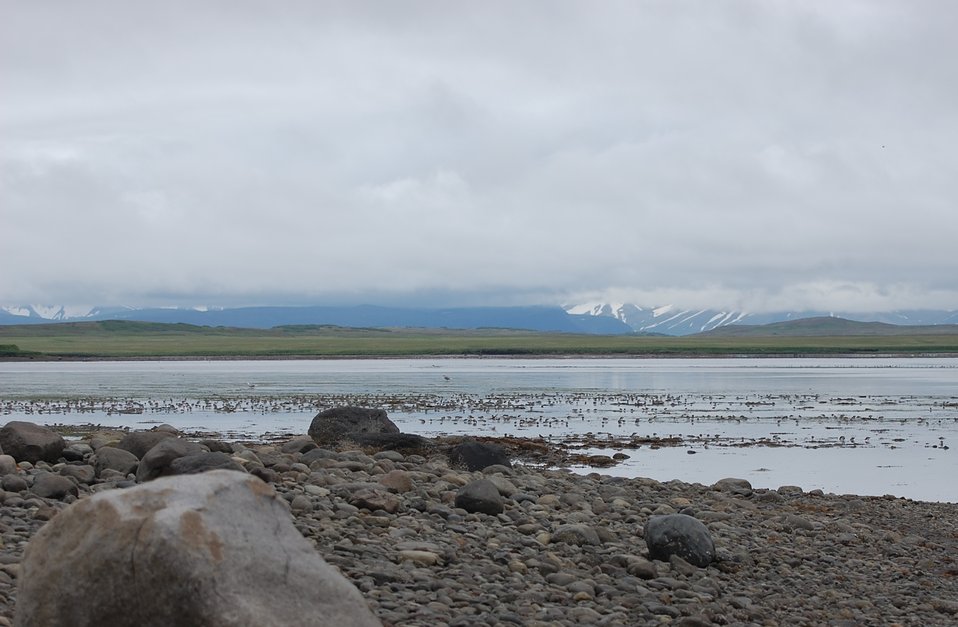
Western sandpipers

Kinzarof Lagoon, Izembek National Wildlife Refuge
Photo by Kristine Sowl,
USFWS, Public Domain